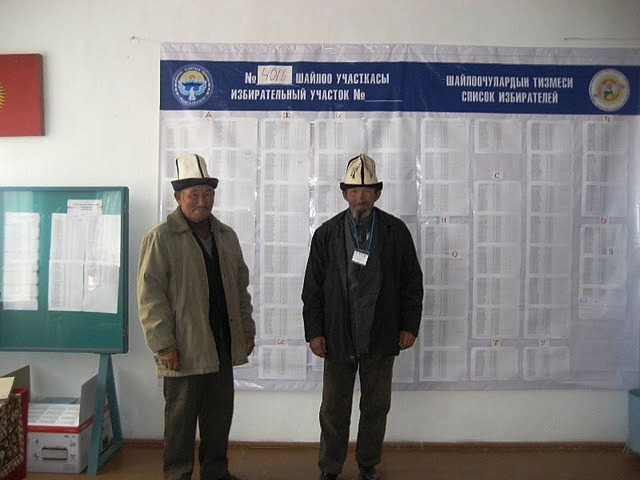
Kyrgyz Election Volunteers Pose for a Photo

Kyrgyz election volunteers in Kyrgyzstan pose for a photo in October 2010.